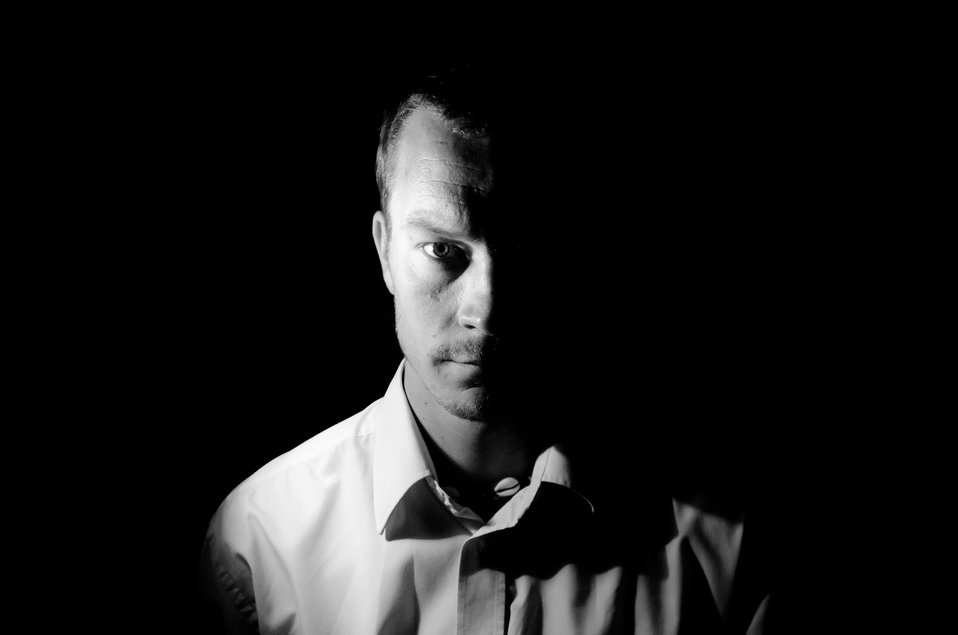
Man in shadow on the black background.